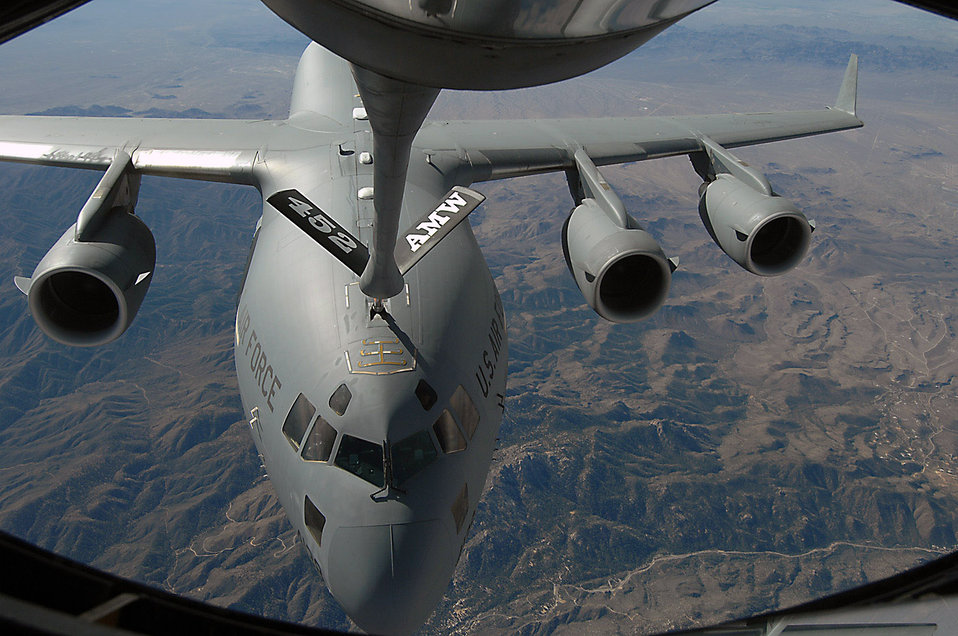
Lights, camera, Air Force Week

C-17 Globemaster III receives fuel from a KC-135 Stratotanker during an aerial refueling mission Nov. 12 over the Southwest. Both aircraft are from the 452nd Air Mobility Wing at March Air Reserve Base, Calif.